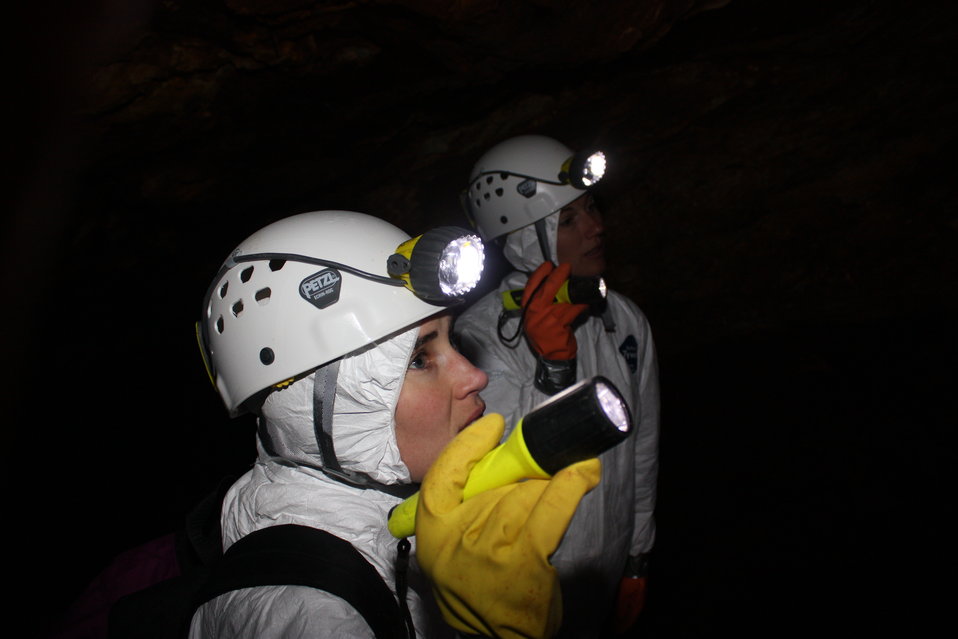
NCWRC biologist Gabrielle Graeter and USFWS biologist Sue Cameron